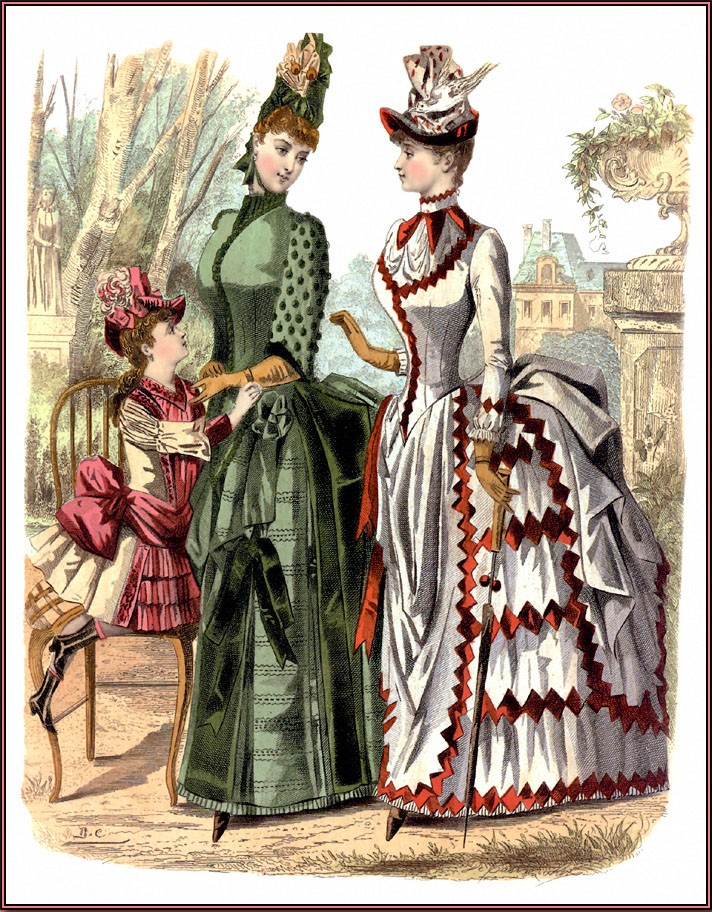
Cperrien-fashionplatescan-p-vf 33